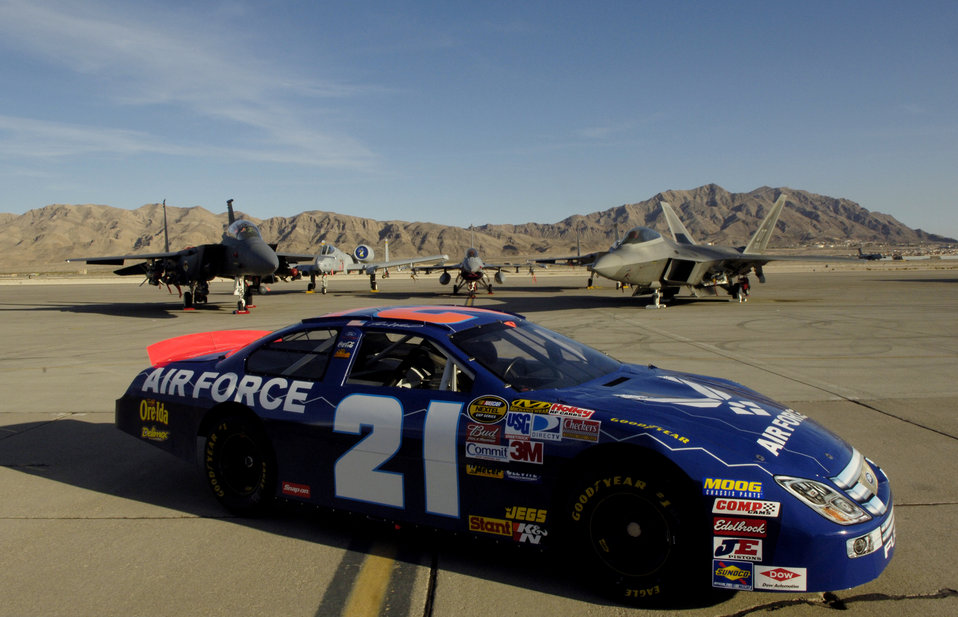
Speed meets power on Nellis flightline

The Air Force #21 car is displayed on the flightline March 8 at Nellis Air Force Base, Nev. Driver Jon Wood was at Nellis visiting Airmen before his NASCAR Nextel Cup UAW Daimler-Chrysler 400 on March 10.